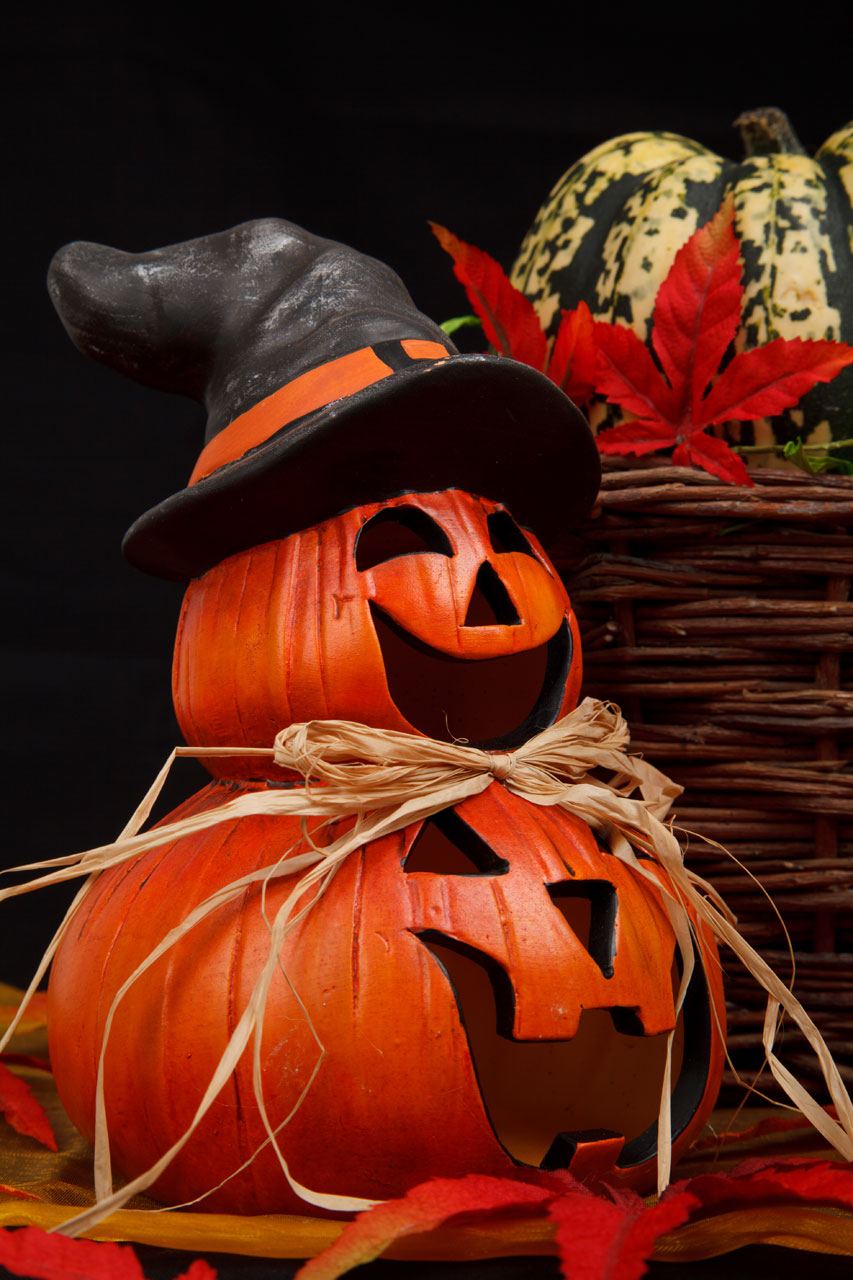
Happy halloween pumpkin

Funny halloween pumpkin with autumn decoration on dark background.